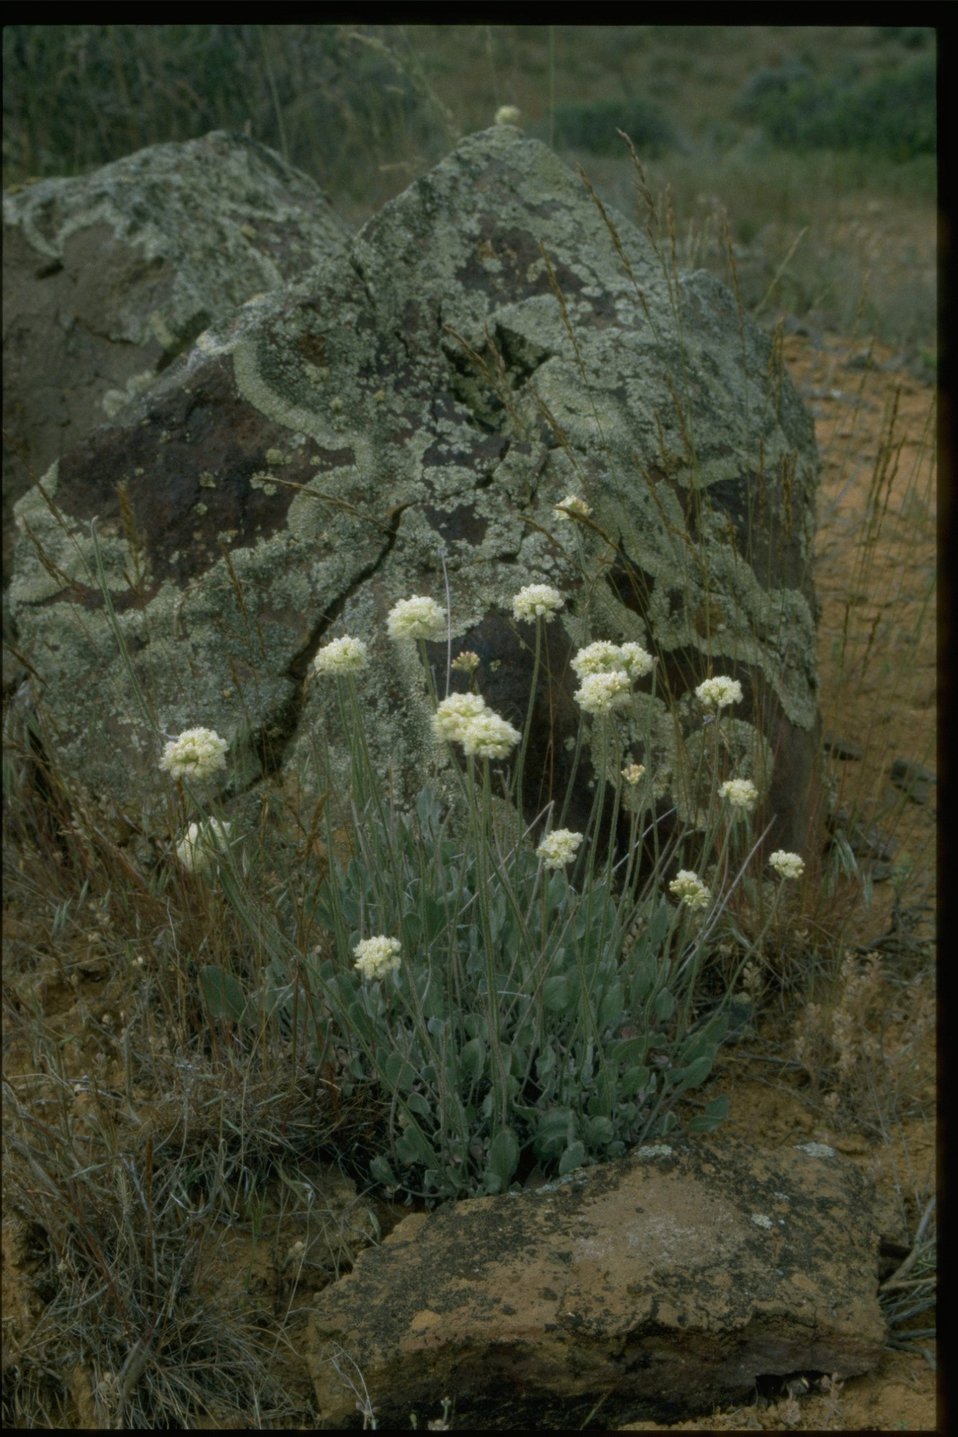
Medium shot of Buckwheat wildflowers and rock lichen.